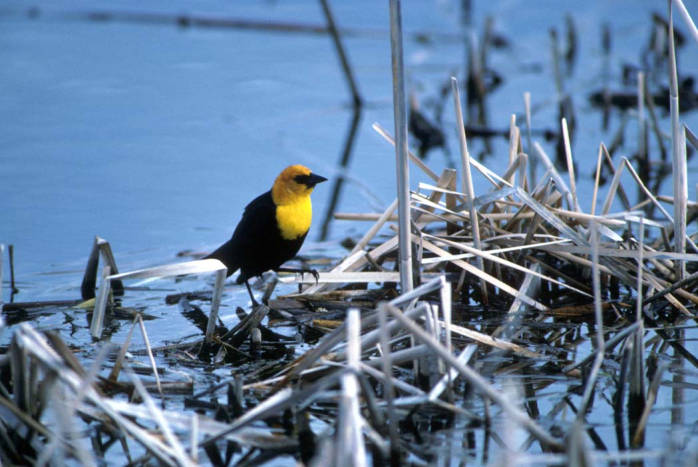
yellow-headed blackbird

J. Clark Salyer National Wildlife Refuge, ND